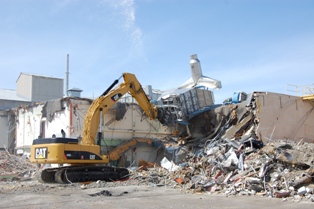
‘Chem Plant’ Decontamination and Decommissioning Advances at Idaho Site

With a contaminated port removed, the processor pulls the rest of one of CPP-630’s rooftop ventilation plenums into the debris pile.